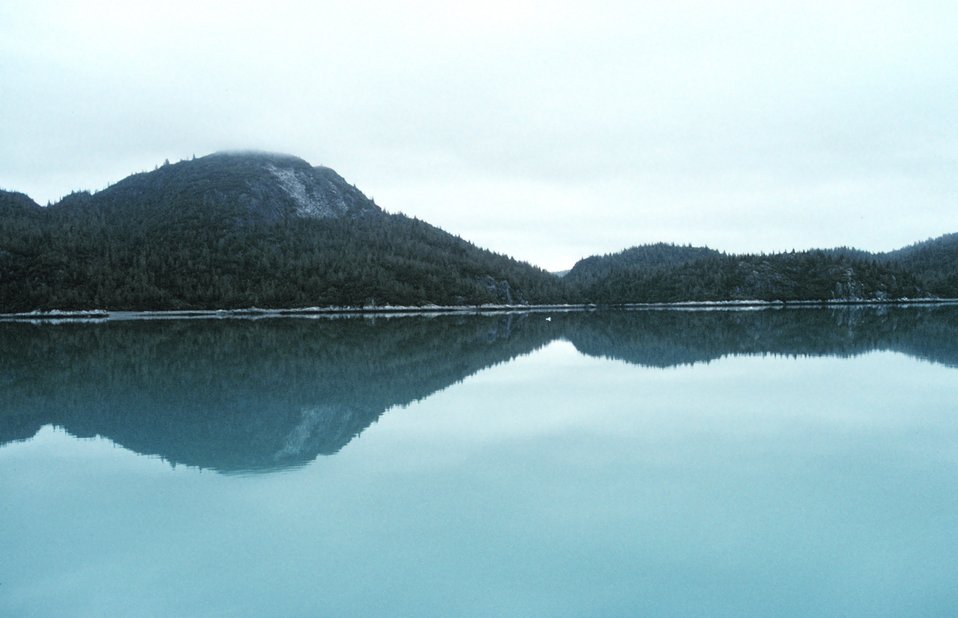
Reflections on a still day